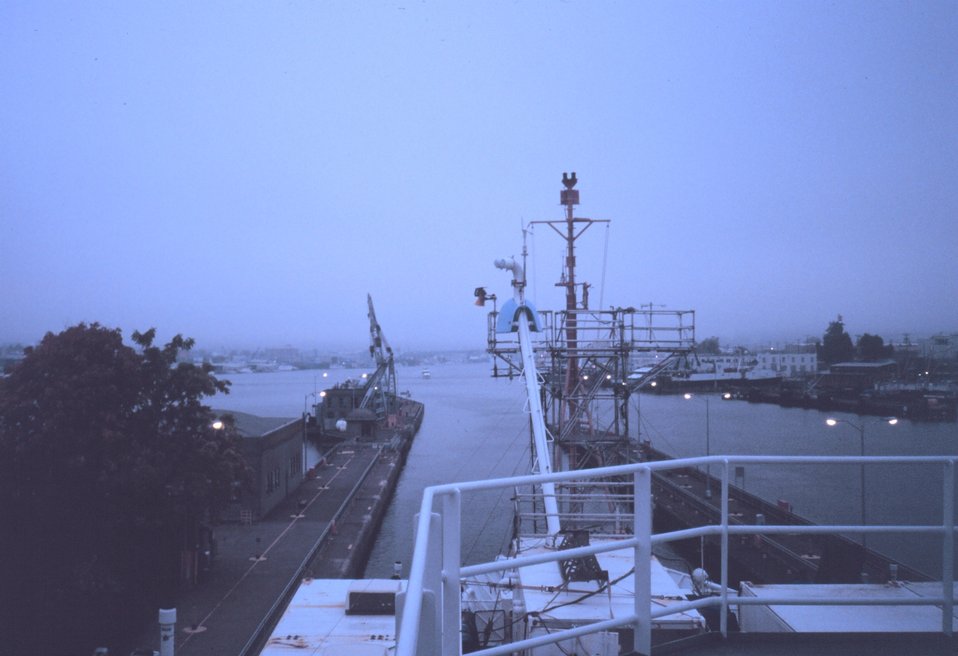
The NOAA Ship RONALD H. BROWN in the Hiram M. Chittenden Locks heading toward Lake Union from Puget Sound.